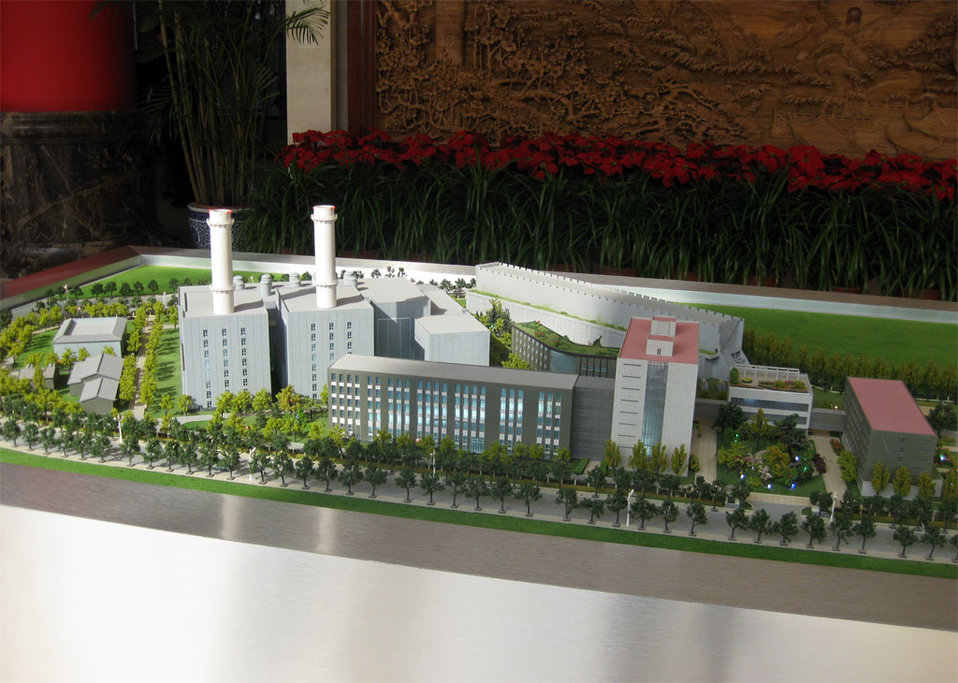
Taiyanggong Gas-Fired Plant Model

Behind the Scenes: A model of the Taiyanggong Gas-Fired Plant in China prior to U.S. Secretary of State Hillary Rodham Clinton's visit February 21, 2009.